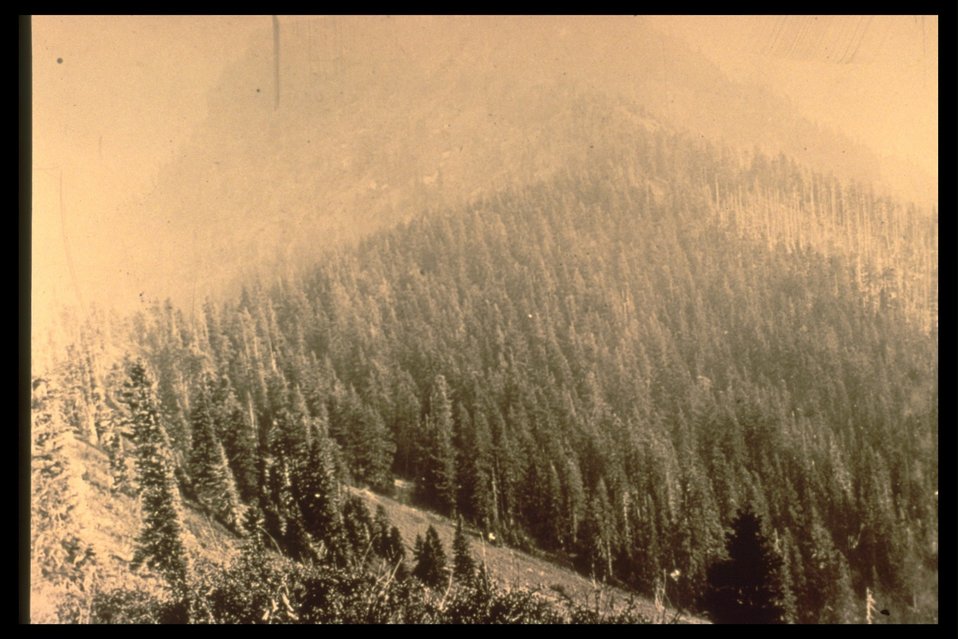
Black and white photo of O & C forest ridge line.